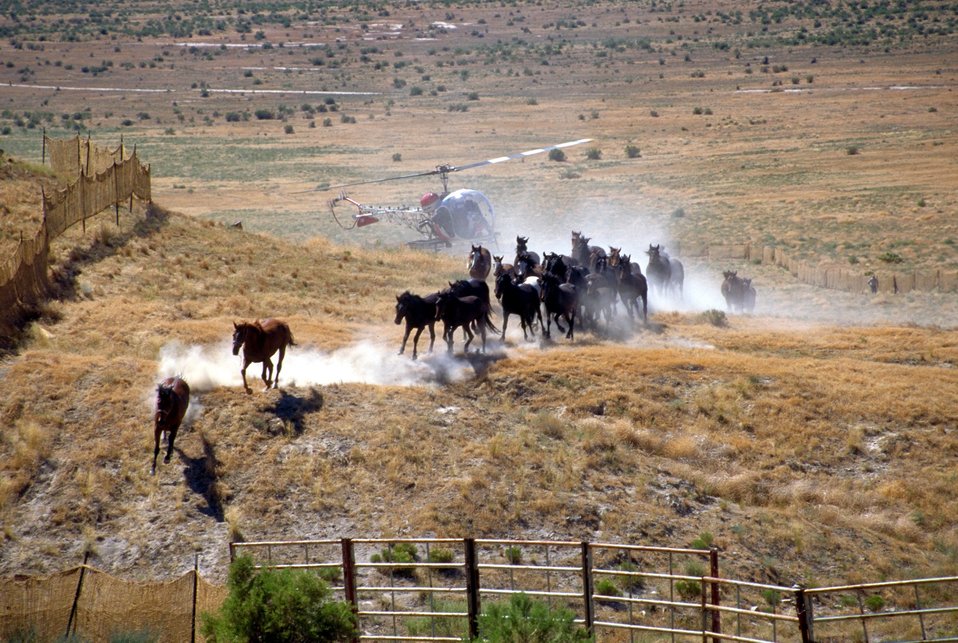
Wild Horse gather, Cedar Mountains.